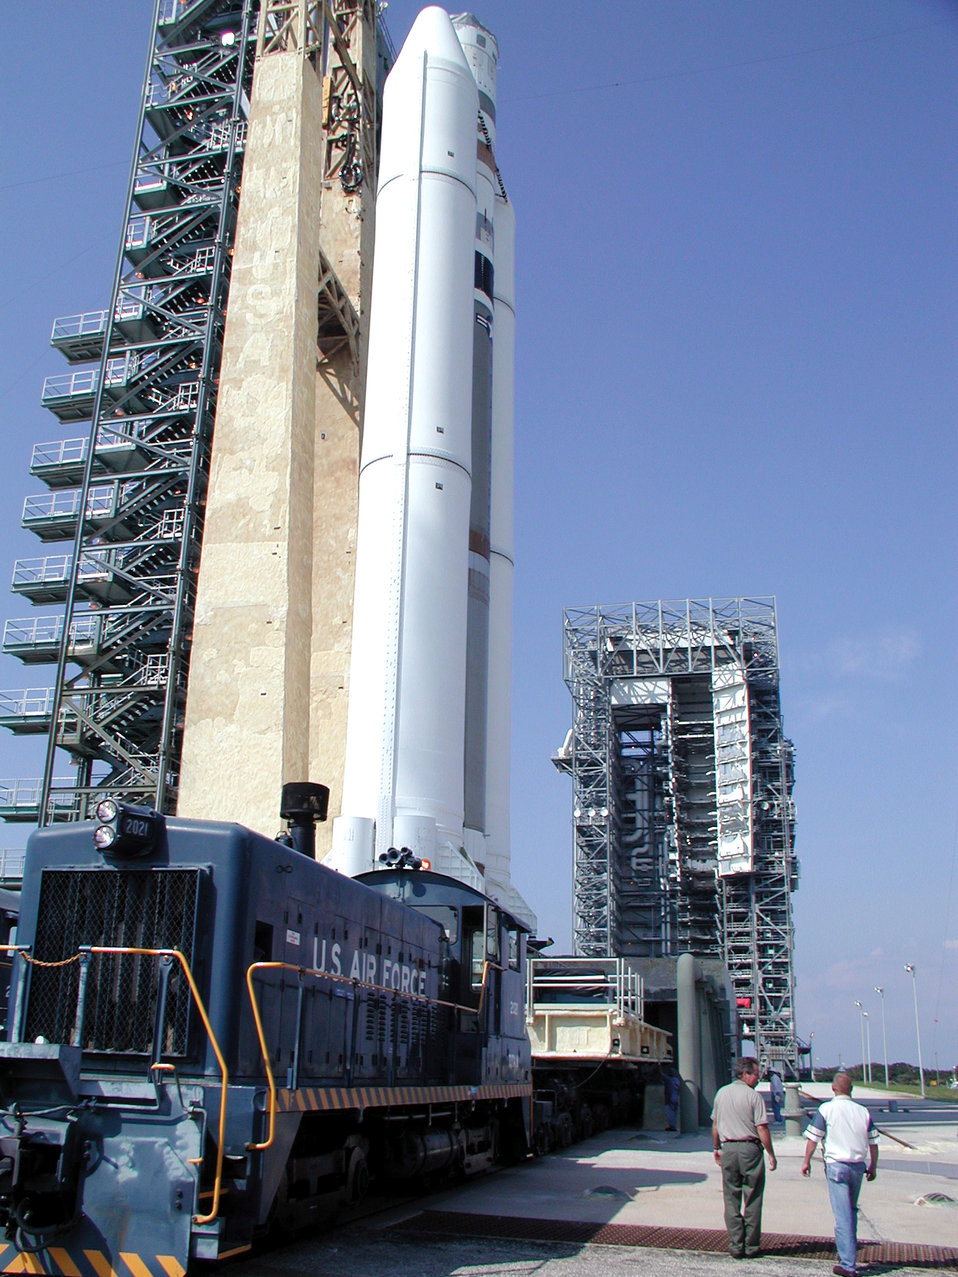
Titan's final flight

CAPE CANAVERAL AIR FORCE STATION, Fla. -- A Titan IVB rolls out from the Solid Motor Assembly and Readiness Facility to Space Launch Complex 40 in preparation for the February 2004 launch of a Defense Support Program satellite. This will be the second to last Titan IVB to launch from here.